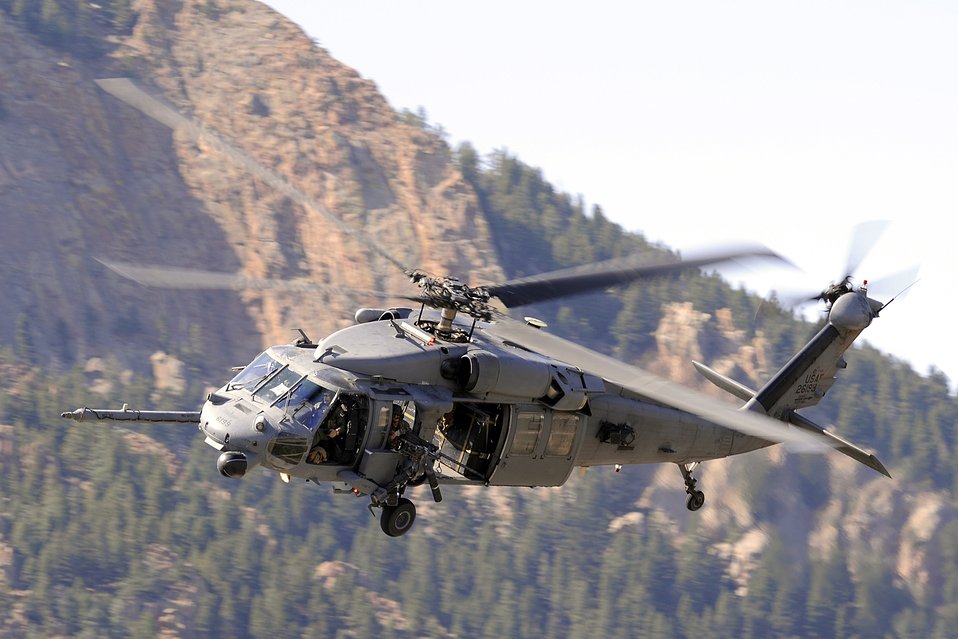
Search and rescue demonstration

An HH-60 Pave Hawk helicopter crew participates in a combat search and rescue demonstration Oct. 1, 2010, at the U.S. Air Force Academy in Colorado Springs, Colo. The HH-60 and its crew are assigned to Davis Monthan Air Force Base, Ariz.